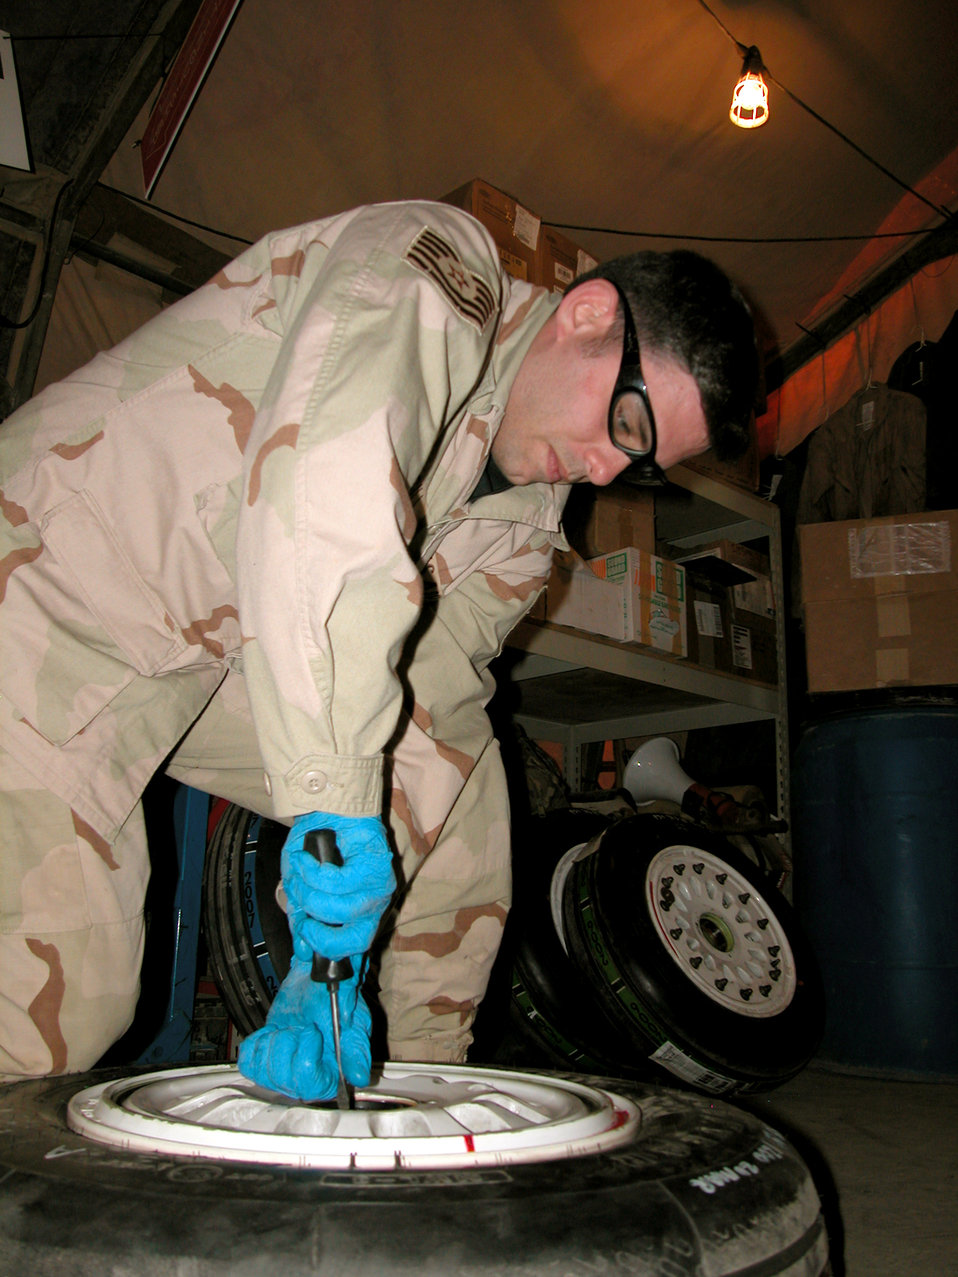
Transient alert maintainers provide critical mission support

Tech. Sgt. James Marsili works on an F-16 Fighting Falcon wheel in the 332nd Expeditionary Maintenance Squadron's Crash Recovery, Wheel and Tire shop at Balad Air Base, Iraq. Airmen in the shop work on about 30 wheels a week. Sergeant Marsili is deployed from the 366th Aircraft Maintenance Squadron, Mountain Home Air Force Base, Idaho.